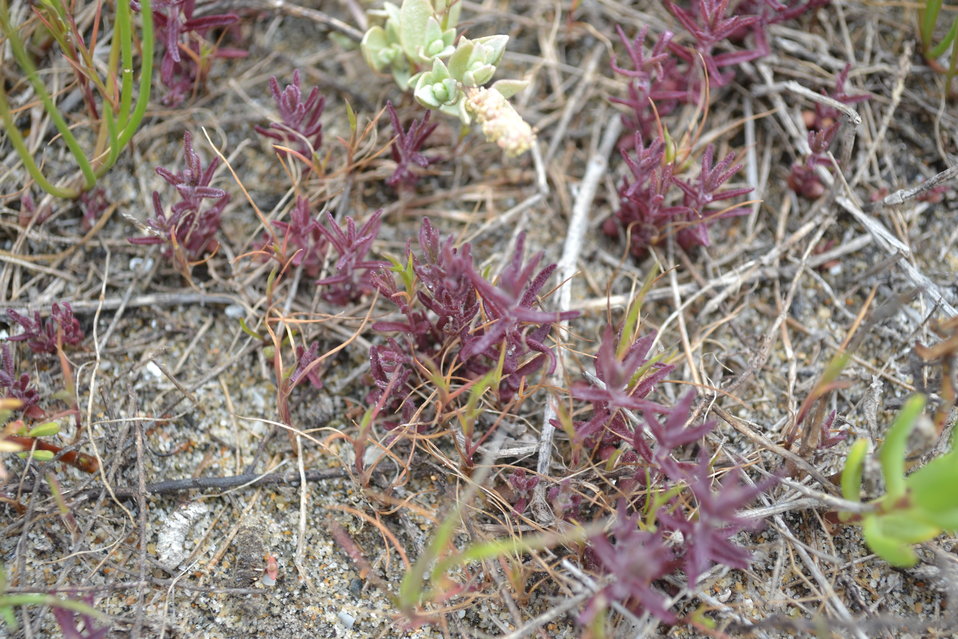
The beginnings of Salt marsh bird's beak

During the mid to late winter, Salt marsh birds beak (Cordylanthus maritimus maritimus) looks dark purple/magenta until spring brings out it's creamy white flower petals.